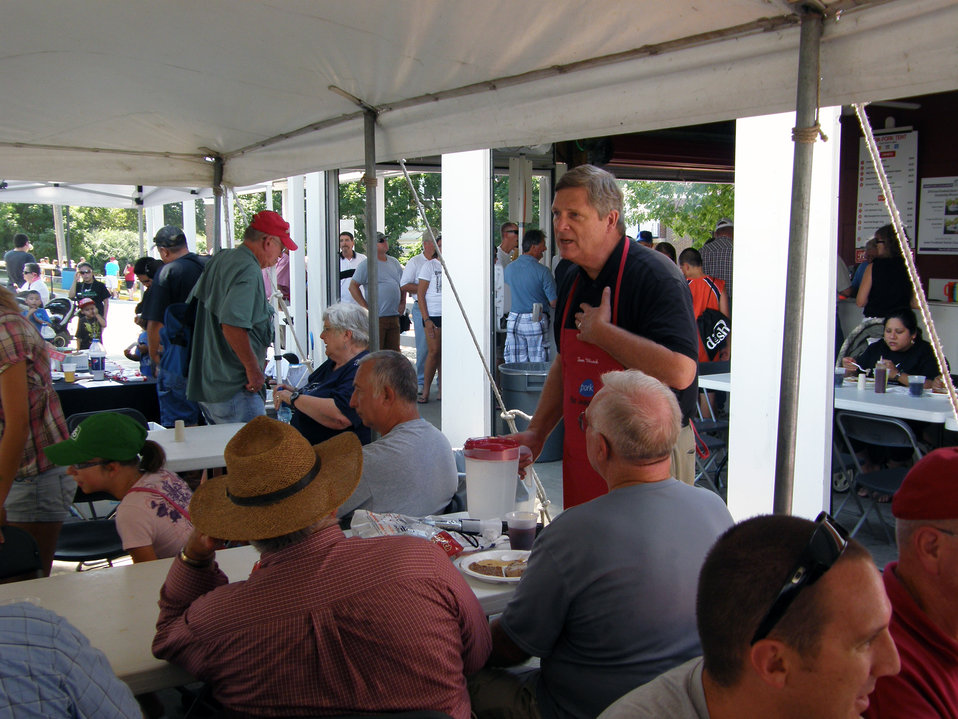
Agriculture Secretary Tom Vilsack's answers question from diners at the Pork Producers tent where he served water and learned about the preparation of pork chops during the White House Rural Forum at the Iowa State Fair, IA.